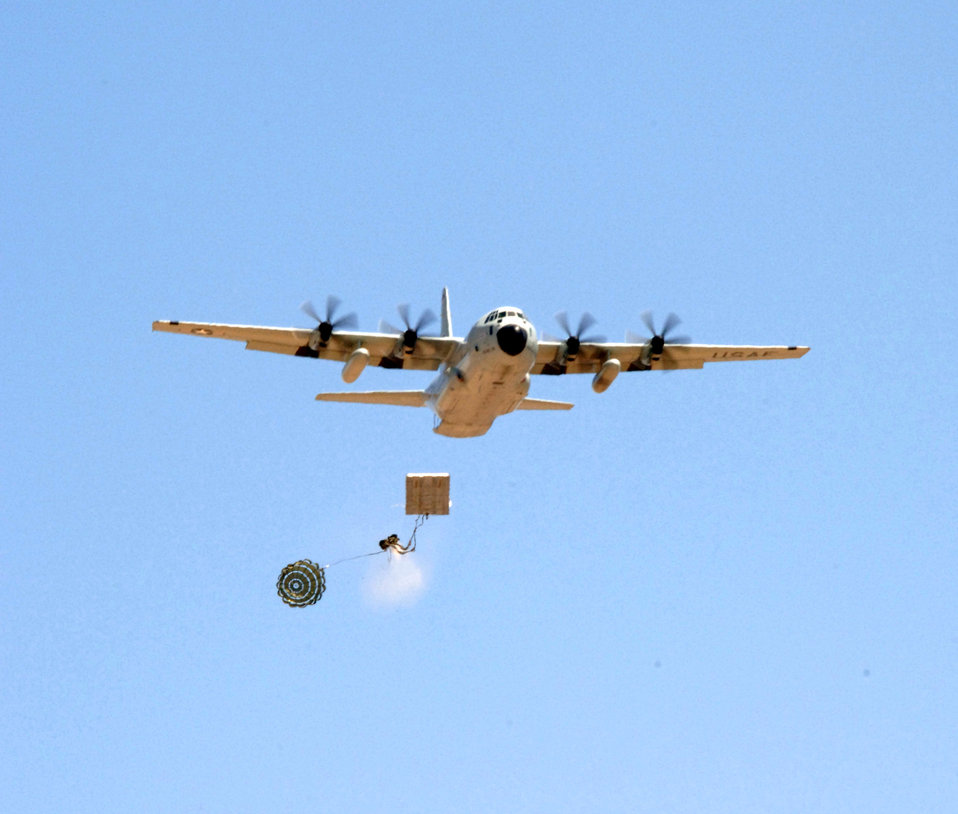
Pallet drop over California

A Type 5 heavy pallet is extracted from a C-130J Hercules flying over Edwards Air Force Base, Calif., on Sunday, April 30, 2006. The mission was part of a test to certify the aircraft's capability to drop this type of pallet. Guard, Reserve and active-duty aircrews from Channel Islands Air National Guard Base, Calif.; Little Rock AFB, Ark.; and Keesler AFB, Miss., participated in the certification. This was the first time the